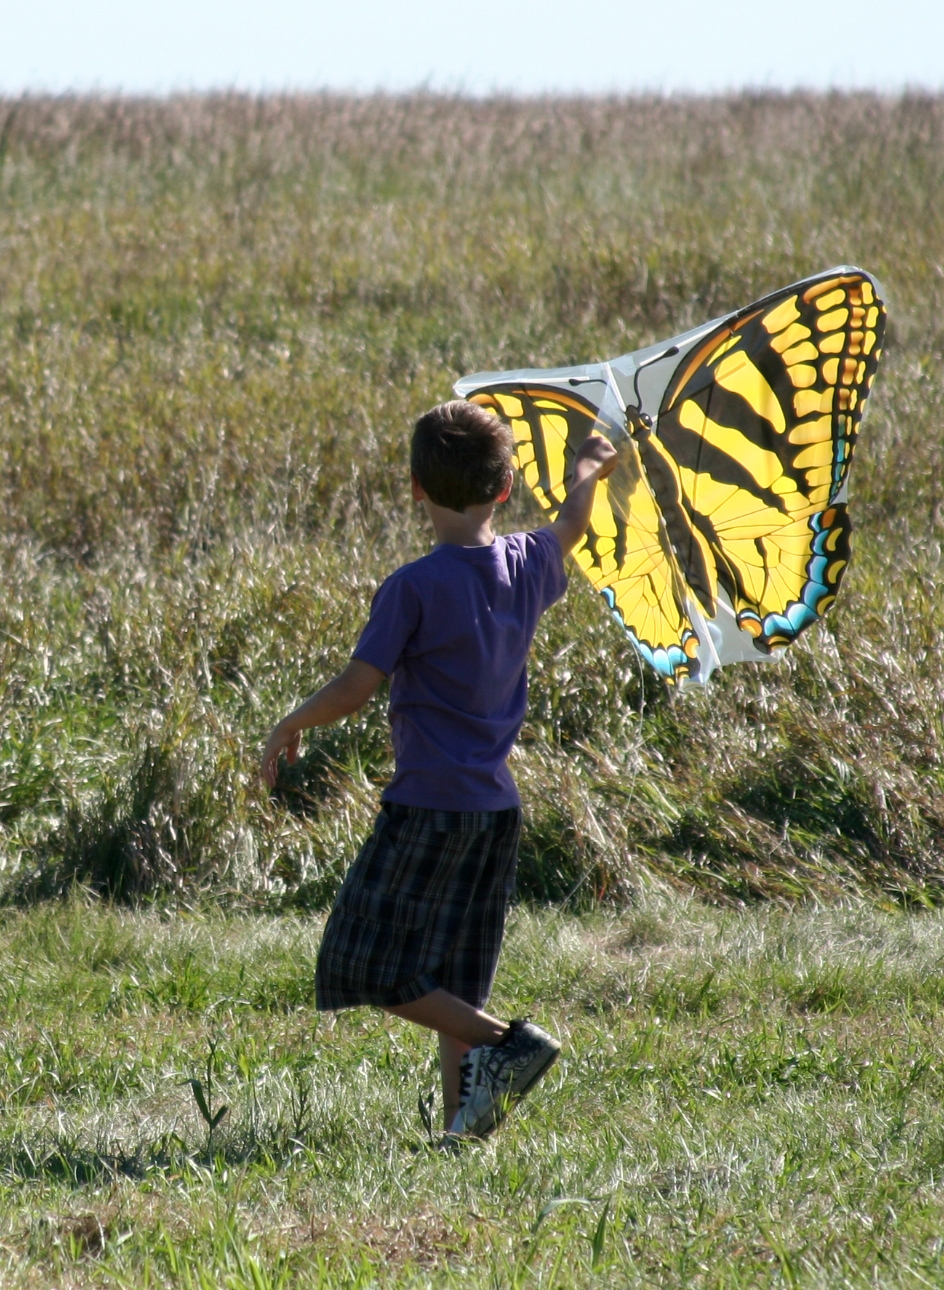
Huron Wetland Managment District

A young boy prepares to launch his kite on a beautiful September afternoon in 2010 at the Huron WMD. The 'Kites N Flight' event focused on getting kids outdoors, and featured an educational piece on bird flight and migration.